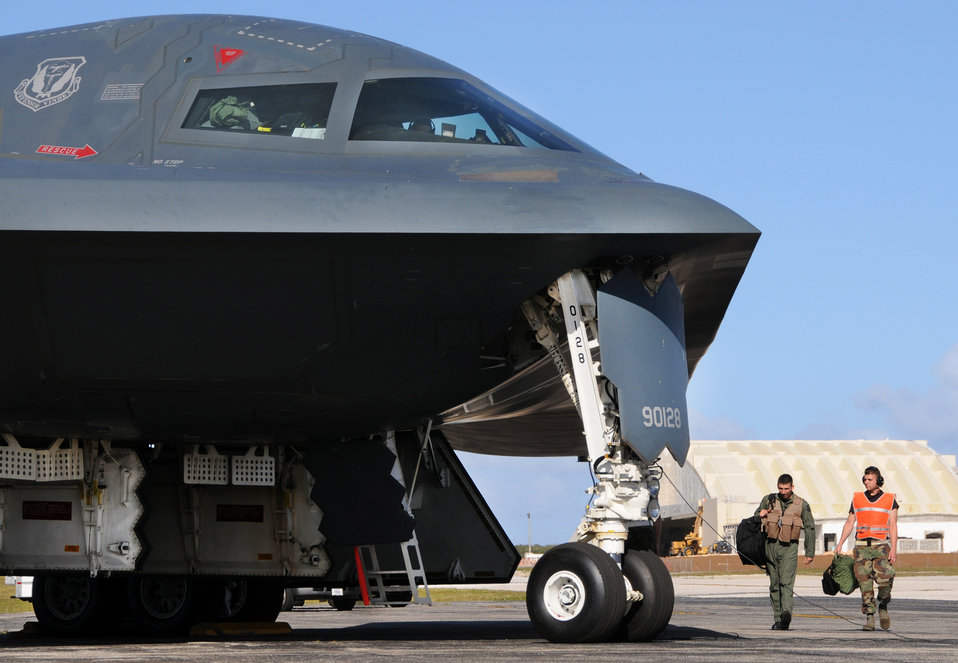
B-2 aircrew participates in exercise in Pacific

Airman 1st Class Joshua Silva walks with a B-2 Spirit pilot during an engine-running crew swap during Exercise Polar Lightning March 12 at Andersen Air Force Base, Guam. B-2s are deployed here from Whiteman AFB, Mo., as part of a regularly scheduled air and space expeditionary force rotation to the Pacific. Airman Silva is a 36th Expeditionary Maintnenance Squadron crew chief.